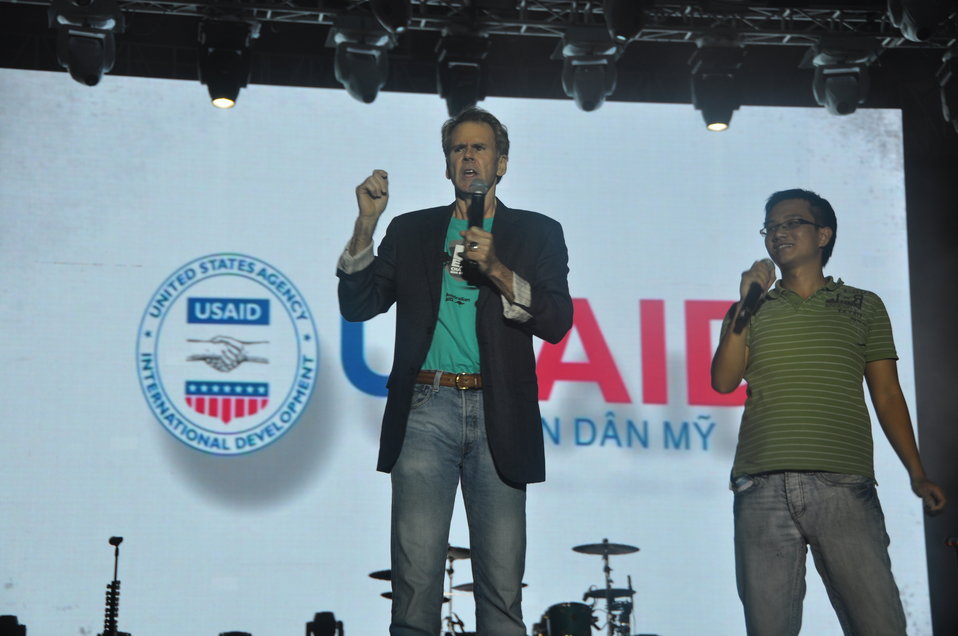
U.S. Ambassador to ASEAN, David L. Carden, challenges youth to 'stay angry and stay young' by fighting human trafficking

USAID co-sponsors MTV EXIT concert, campaign against human trafficking